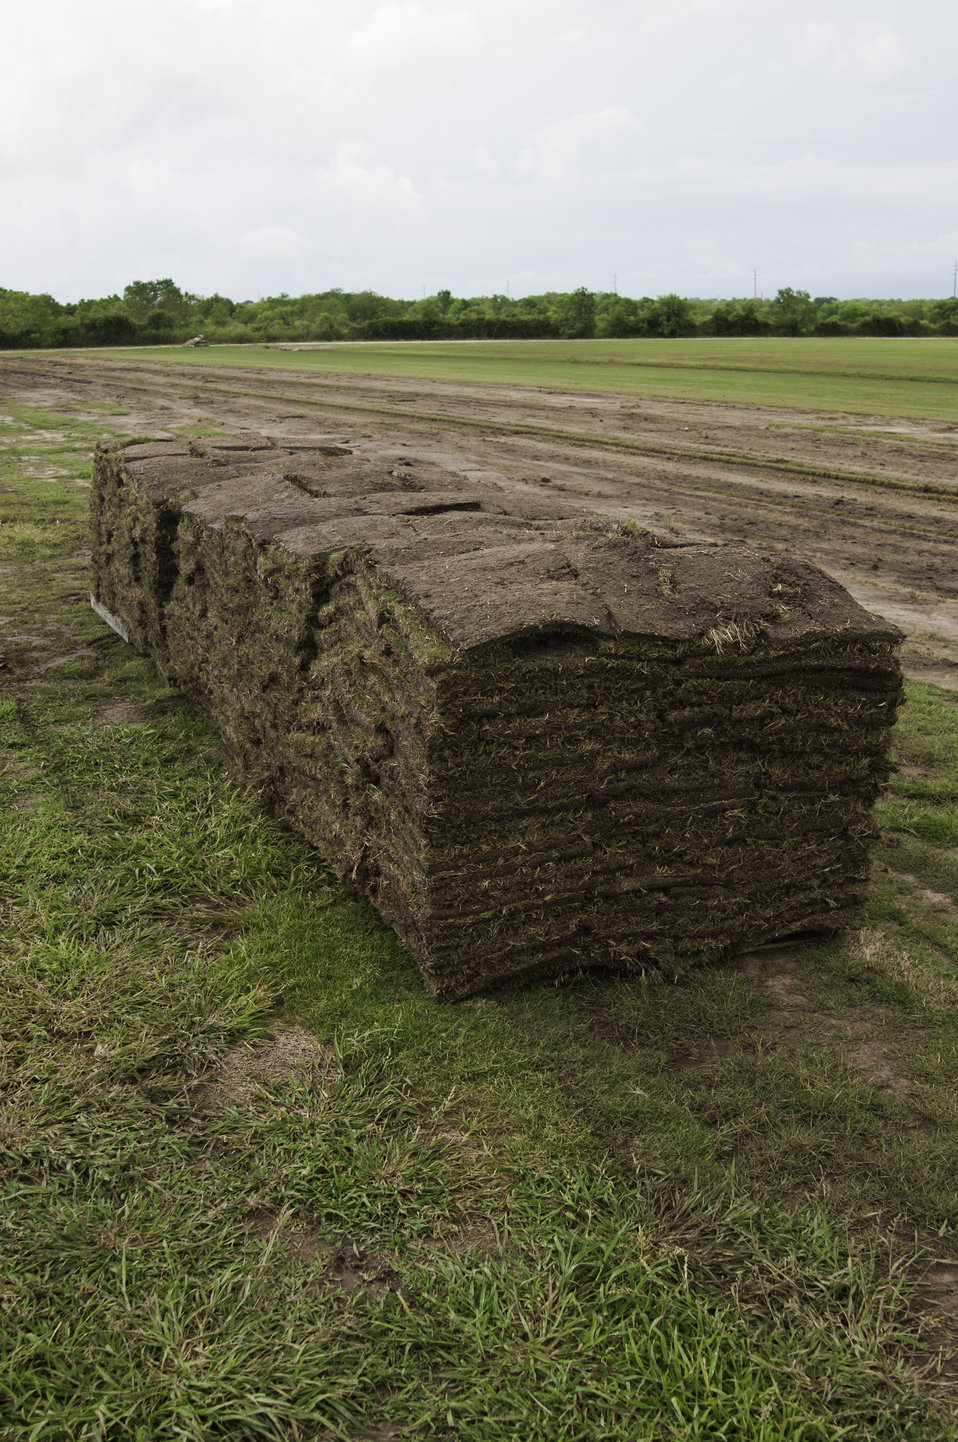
Sod used for landscaping is harvested on the Quality Turf Farms in Guy, TX on Aug. 23, 2013.